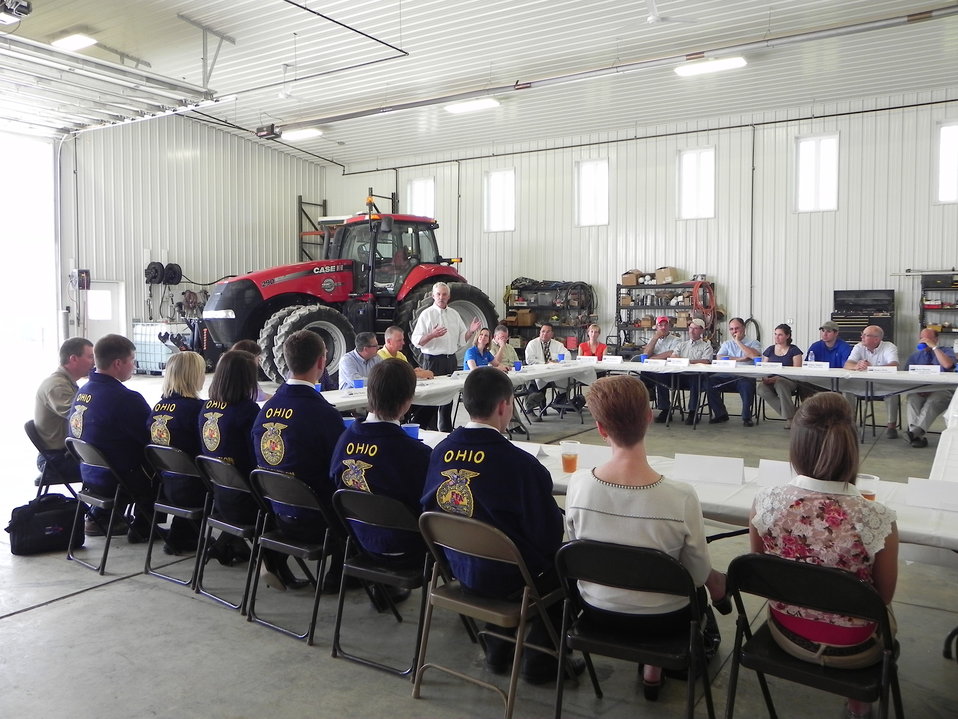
Agriculture Acting Deputy Secretary Mike Scuse thanks the Ohio FFA and 4-H youth members for attending the Food, Farm and Jobs Bill roundtable discussion in Licking County, OH on Thursday, May 30, 2013. Scuse explains the importance of youth in agriculture to the attendees.